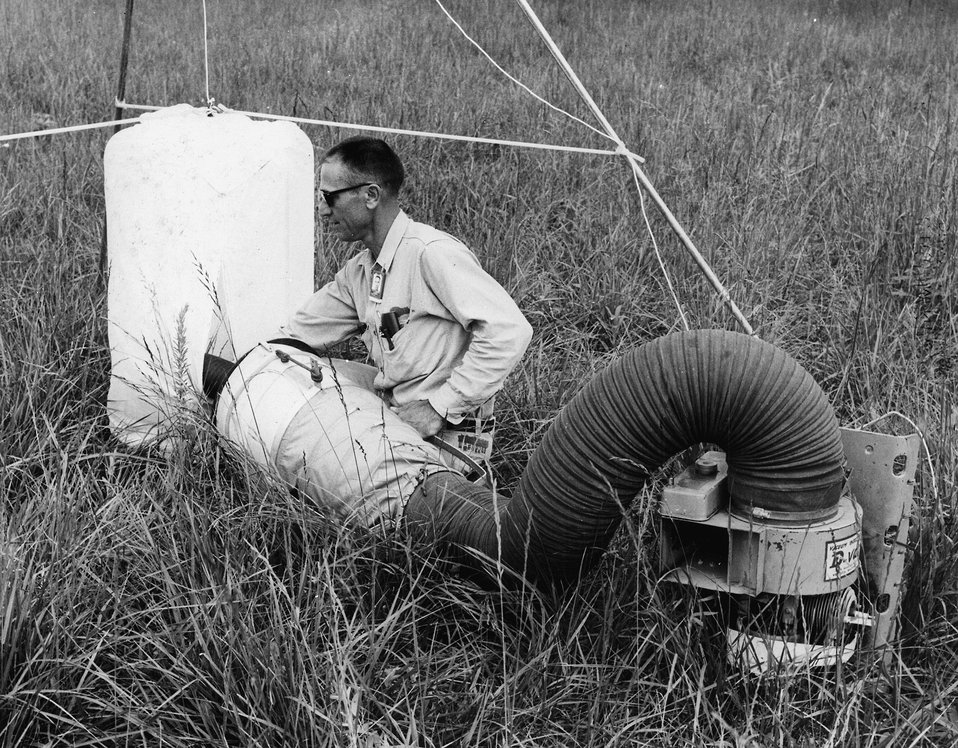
Trapping equipment is being tested in preparation for experiments by Oak Ridge National Laboratory Health Physics Division's Radiation Ecology Section, The project proposes to quick-trap insects in fabric bags and irradiate them with cesium-137. c. 1967